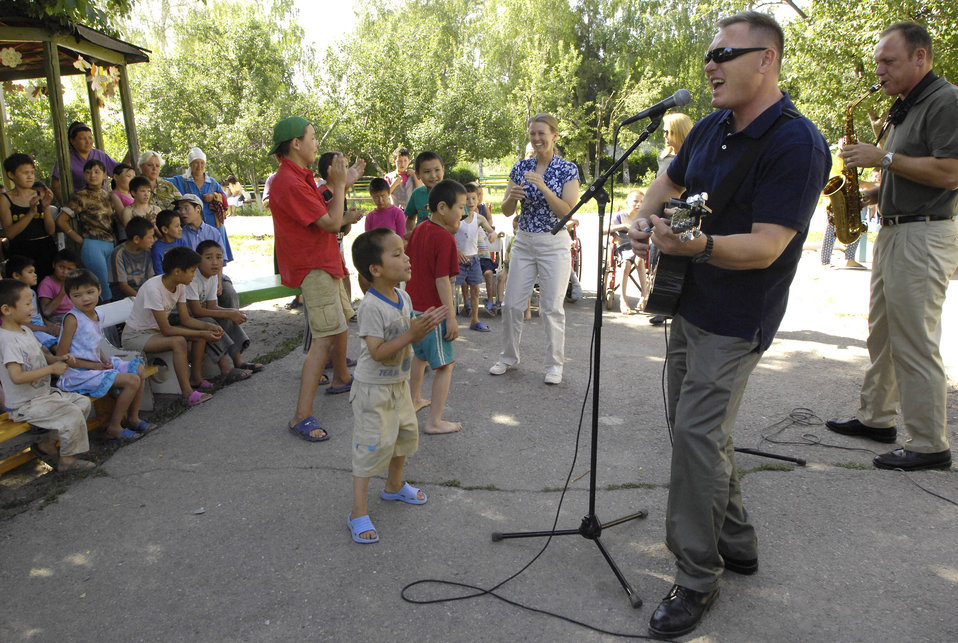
Special concert for some special children

The U.S. Air Forces Central Band Falcon performs for the children of the Belovodosky Orphanage June 14 in Kyrgyzstan. After the band performed, the children returned the favor by singing some of their favorite Russian military songs for the band.